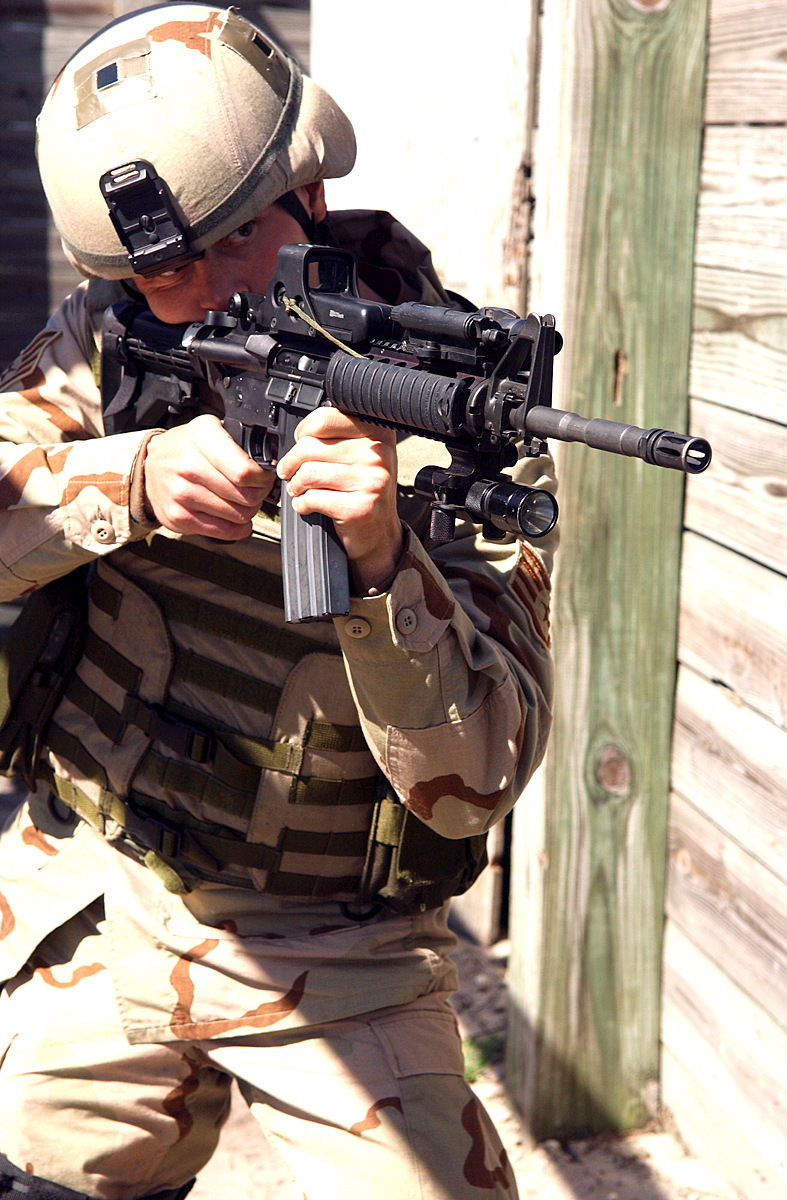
Security forces training

Staff Sgt. Matthew Warters aims his weapon before entering an abandoned building at Camp Blanding, Fla., Wednesday, Feb. 15, 2006, for pre-deployment training. The training helps Airmen hone their skills through realistic combat scenarios. Sergeant Warters is with the 824th Security Forces Squadron at Moody Air Force Base, Ga.